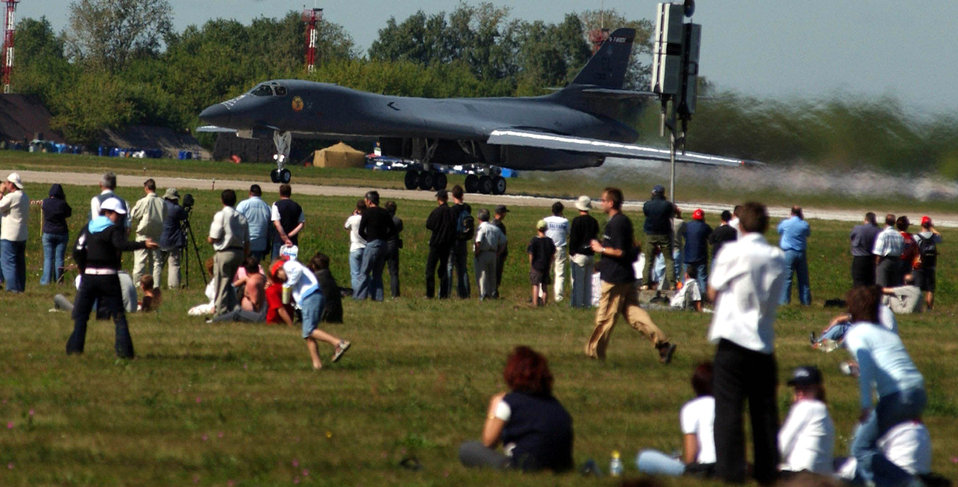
America's B-1B Lancer takes to Russian sky

ZHUKOVSKY, Russia -- An American B-1B Lancer prepares to take off at Ramenskoye Airfield on Aug. 18 at the Moscow International Aviation and Space Salon here. The B-1B is performing daily aerial demonstrations at the air show. Other American aircraft on static display during the show include the F-15E Strike Eagle, F-16 Fighting Falcon, KC-10 Extender and KC-135 Stratotanker.